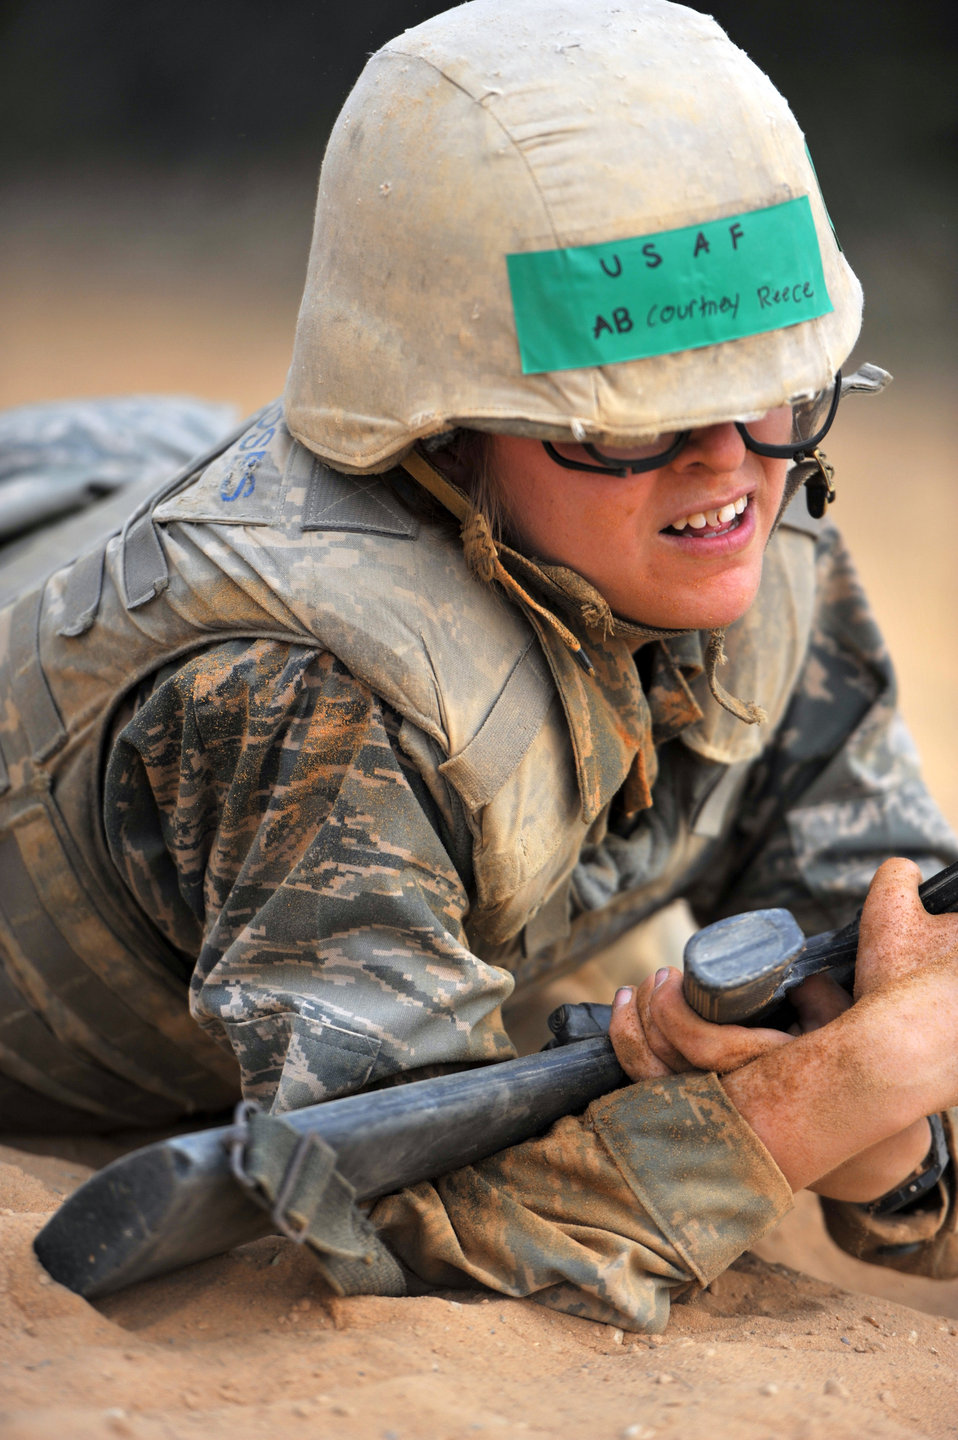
BEAST

Basic trainees go through their sixth week of Air Force basic military training at the Basic Expeditionary Airman Skills Training on May 25, 2011, at Lackland Air Force Base, Texas.